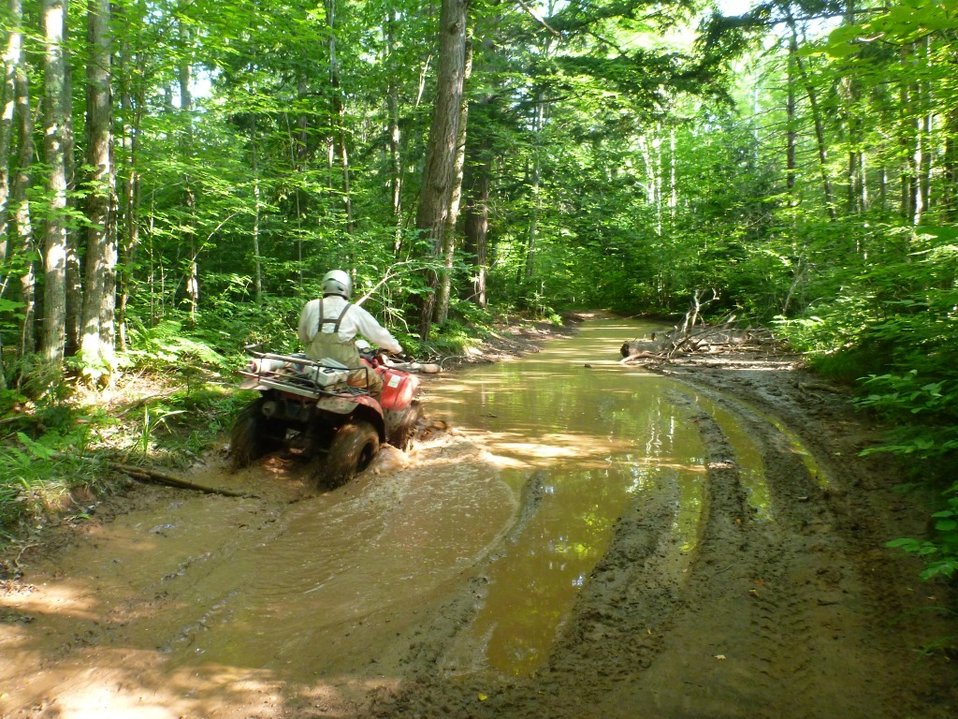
Service Employee Alex Carter ATVing to a remote larval assessment site at the West Sleeping River, Michigan.